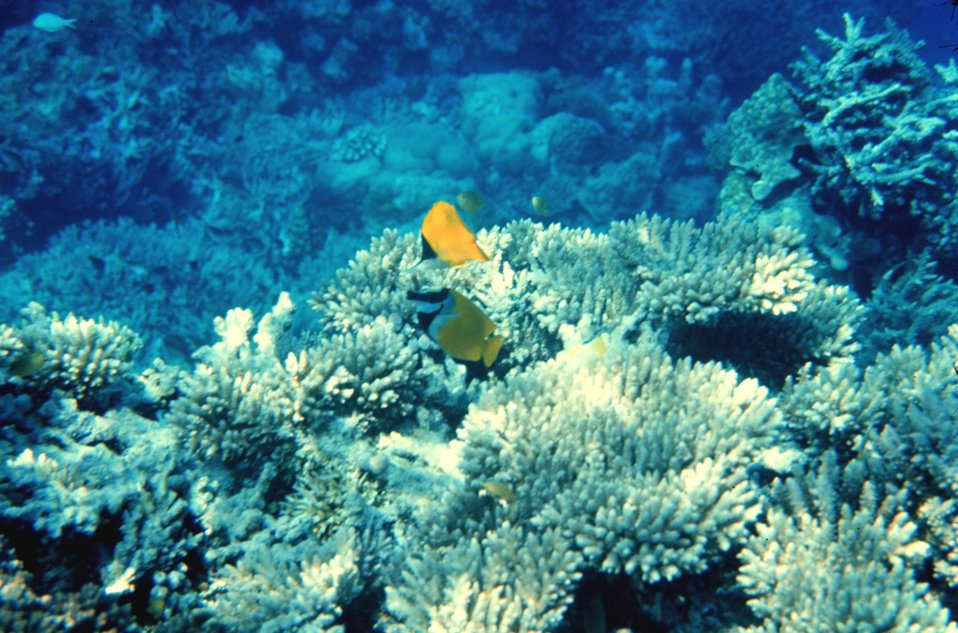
Forcipiger Longirostris is top fish - Foxface rabbitfish (Siganus vulpinis) is bottom fish